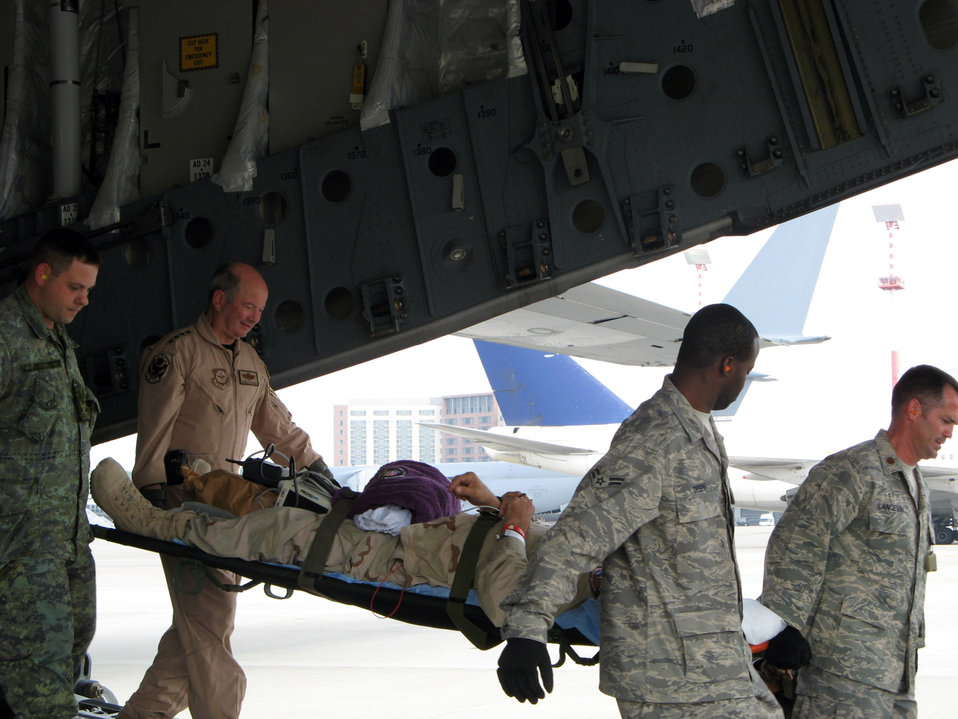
Vice chief visits wounded warriors in Iraq

Gen. Duncan J. McNabb helps Contingency Aeromedical Staging Facility members transport an injured contractor May 29 upon landing at Ramstein Air Base, Germany. General McNabb traveled to the Air Force Theater Hospital at Balad AB, Iraq, to visit wounded warriors and accompany them on a flight back to Ramstein AB. General McNabb is the Air Force vice chief of staff.